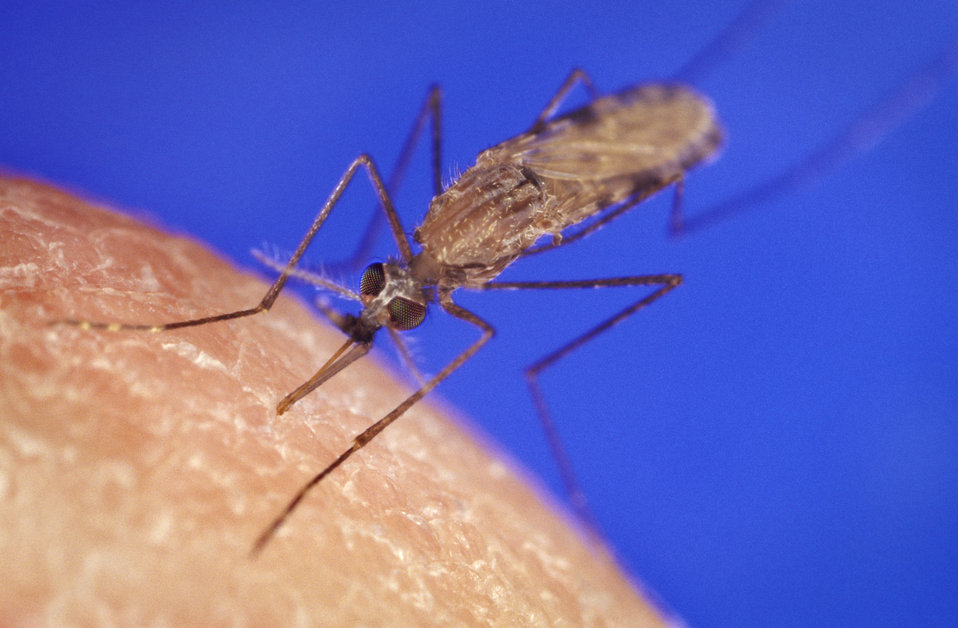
Blood-feeding Anopheles gambiae mosquito. This mosquito is one of the leading malaria vectors in the world.